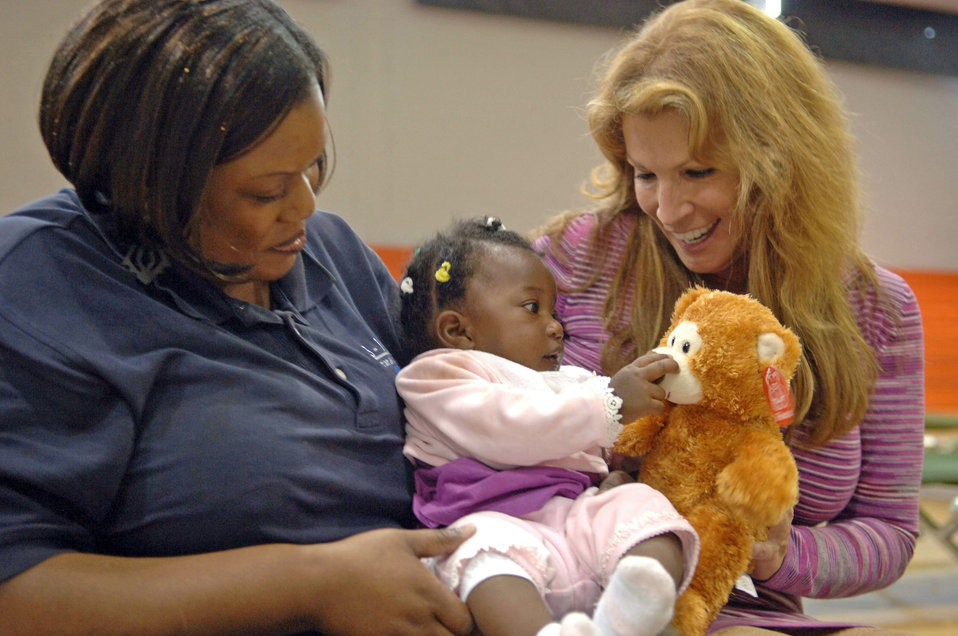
Community, Air Force team up to give Haitians bear hugs

Francis Dugue (left) holds 6-month-old evacuee Anaellen Jean Louis as she plays with a teddy bear donated by Michele Gillen Jan. 24, 2010, at Homestead Air Reserve Base, Fla. Mrs. Gillen donated 2,500 of the bears to children of displaced evacuees at Homestead ARB and other places in the Miami area on behalf of Bear Hugs for Haiti. Mr. Dugue is a Miami-Dade 311 government center Memployee. Mrs. Gillen is an an WFOR-TV Miami chief investigative reporter.